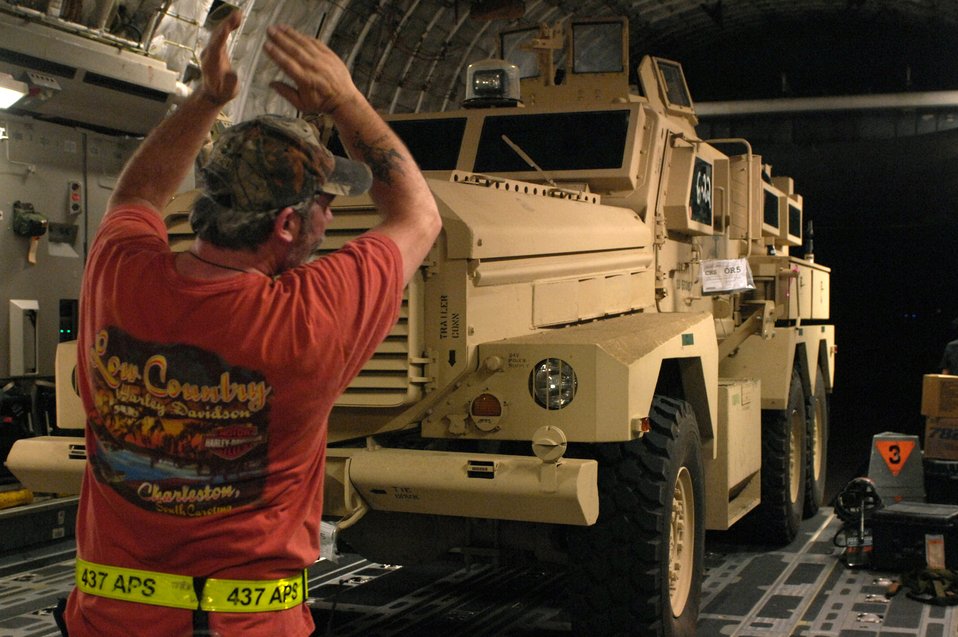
Destination: Iraq

Bill Leeson of the 437th Aerial Port Squadron at Charleston Air Force Base, S.C., loads a Mine Resistant Ambush Protected armored vehicle on a C-17 Globemaster III for shipment to Iraq July 28. An estimated 3,500 MRAP vehicles are expected to be in Iraq by Dec. 31.